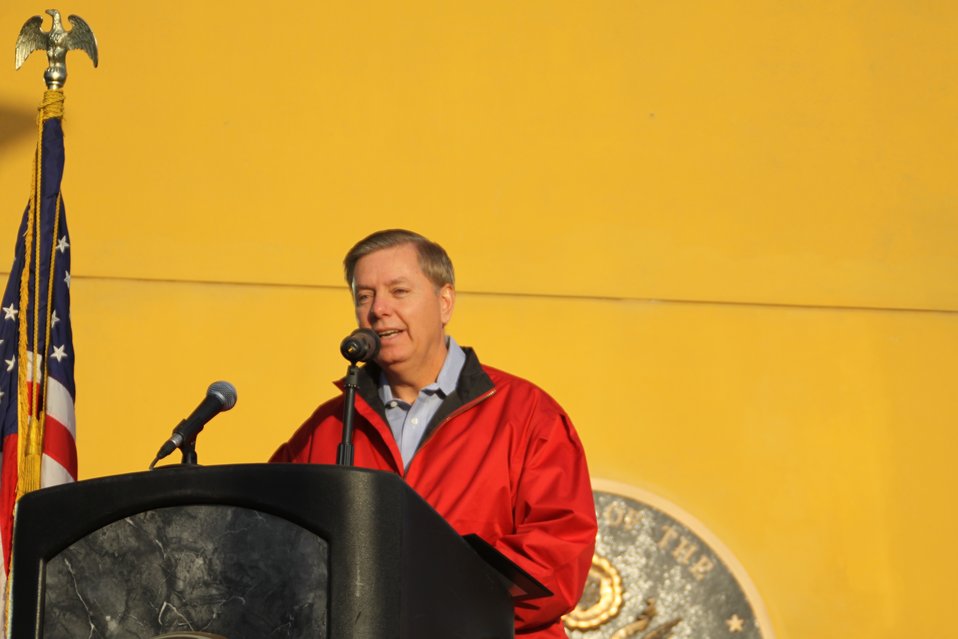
Senator Graham